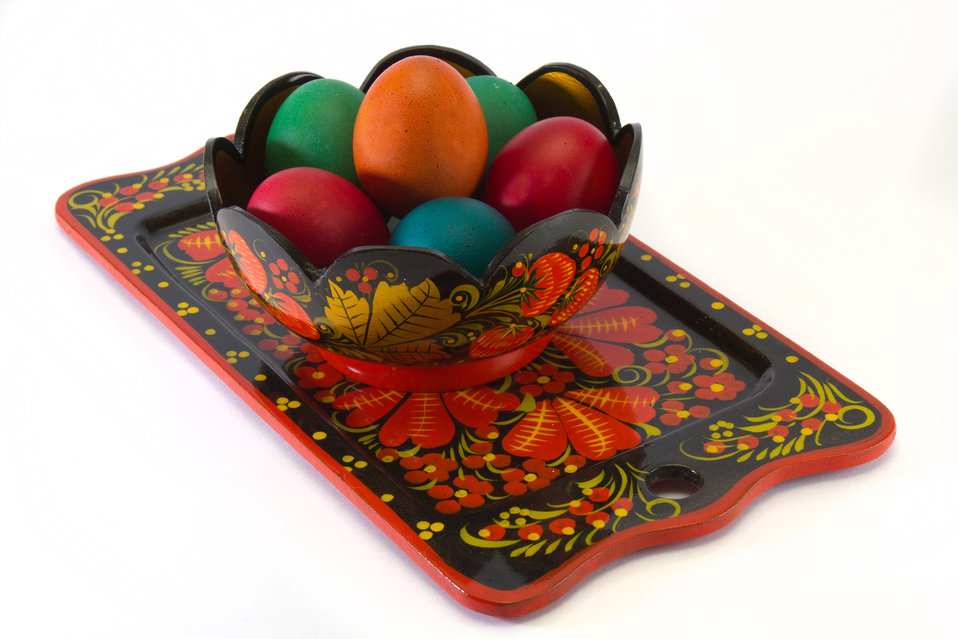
Easter eggs in a vase on a tray.

Easter eggs in a vase on a tray khokhloma..